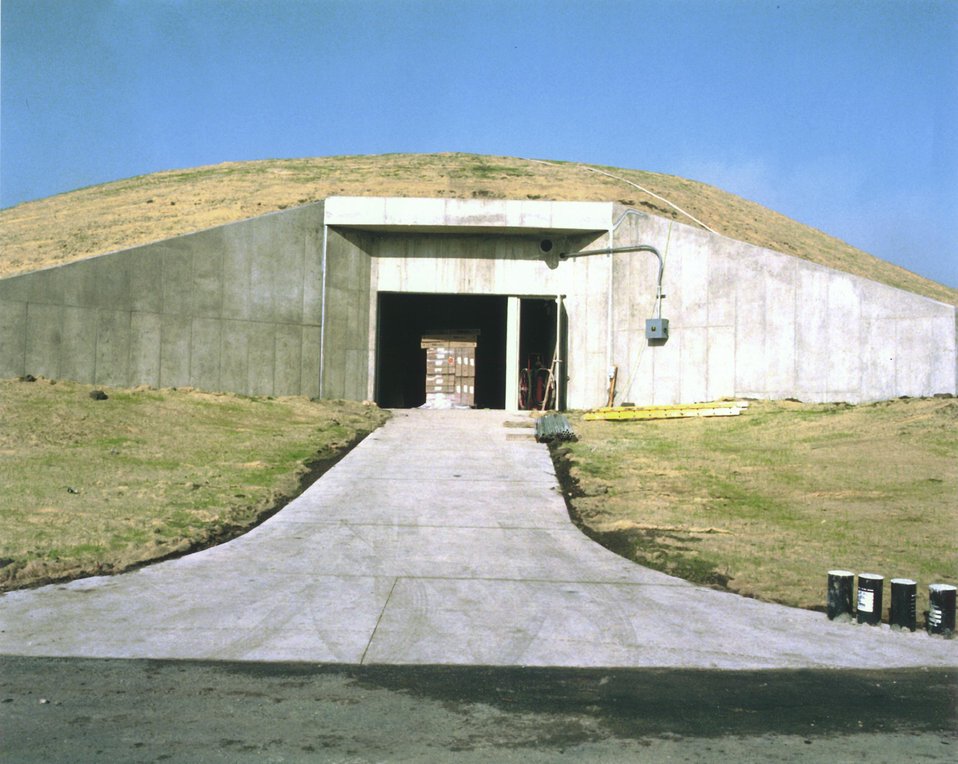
THE EARTH BERM STRUCTURE COVERING THE MINIBOONE NEUTRINO EXPERIMENT AT FERMI NATIONAL LAB.

THE MINIBOONE COLLABORATION, A GROUP OF 50 SCIENTISTS FROM 12 INSTITUTIONS, WILL USE THE BUILDING AND THE TANK BELOW TO STUDY THE PROPERTIES OF NEUTRINOS, GHOST-LIKE PARTICLES THAT ACCOUNT FOR PERHAPS AS MUCH AS 5% OF THE TOTAL MASS IN OUR UNIVERSE. THIS EXPERIMENT RELIES ON A SPHERICAL TANK FILLED WITH MINERAL OIL AND AN ELECTRONICS ROOM ABOVE IT. PHOTO SENSORS MOUNTED ON THE WALLS OF THE TANK WILL REGISTER LIGHT FLASHES FROM NEUTRINO INTERACTIONS INSIDE THE OIL.